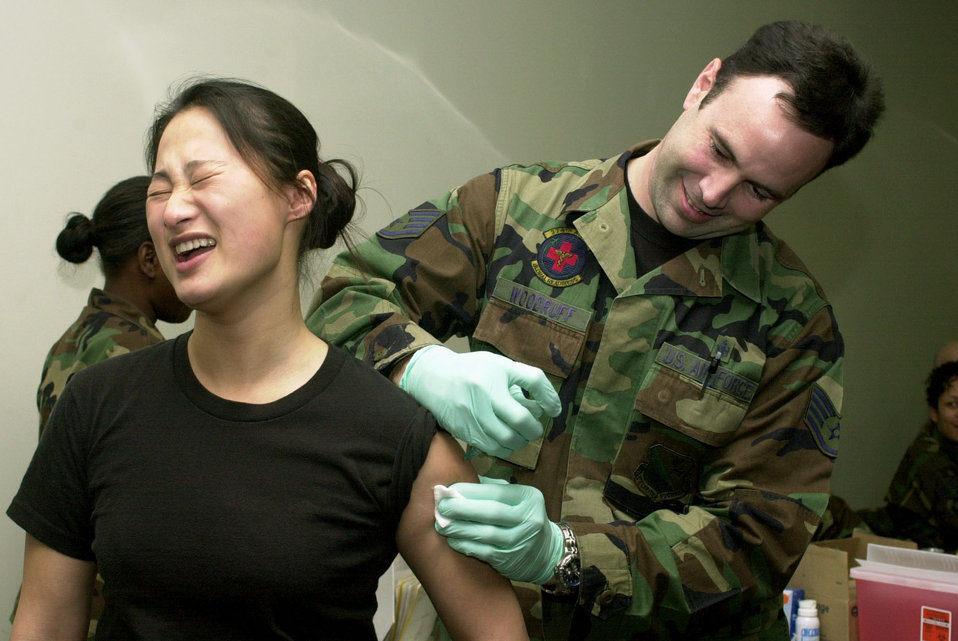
What a pain

YOKOTA AIR BASE, Japan -- Airman Misty Abeln winces as Staff Sgt. Fred Woodruff gives her a shot during deployment processing here Jan. 6. About 240 Airmen from the 374th Airlift Wing deployed to support humanitarian relief efforts in the tsunami-devastated areas of Southeast Asia. Airman Abeln is a chaplain's assistant with the wing. Sergeant Woodruff is assigned to the 374th Aerospace Medicine Squadron.